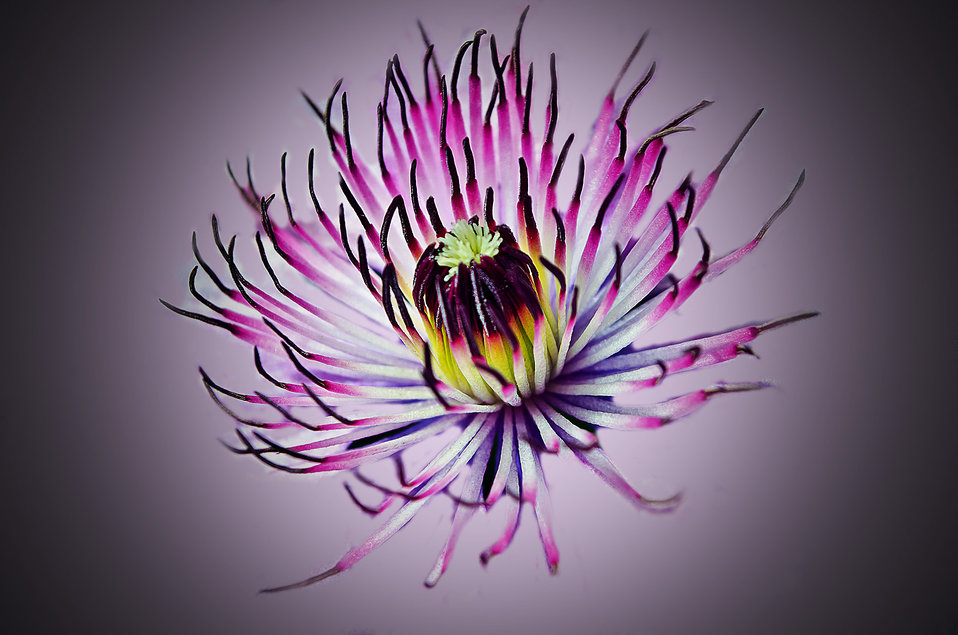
Nice flower- macro.